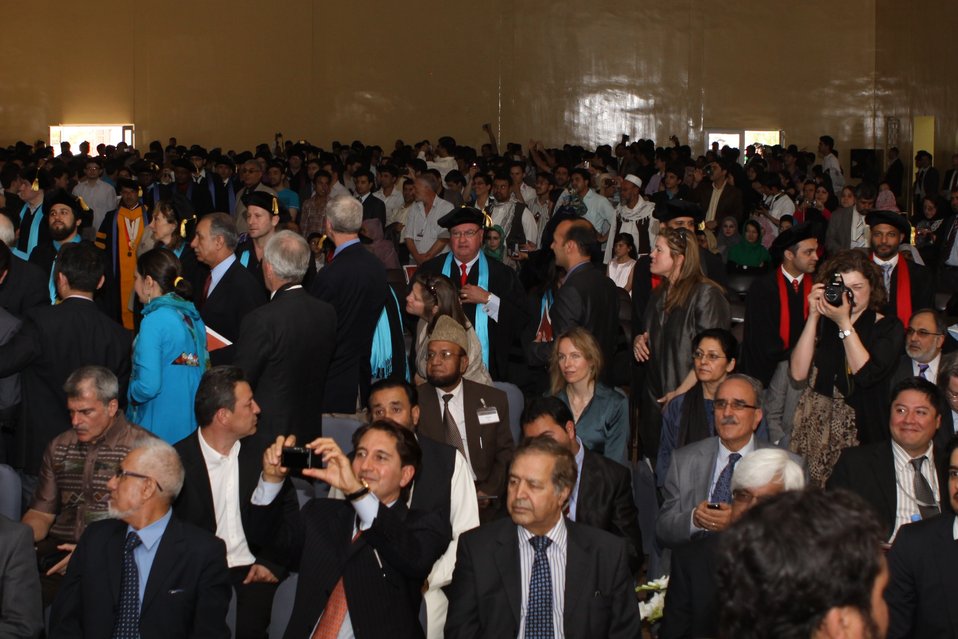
100526 AUAF Graduation 123